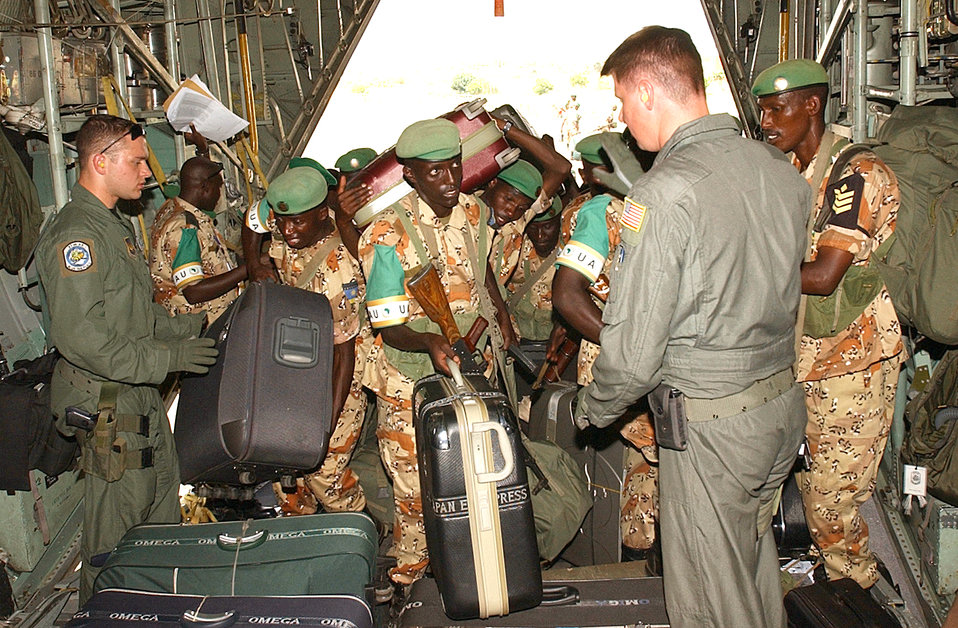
Back to Rwanda

SUDAN -- Airman 1st Class Brian McCann (left) and Staff Sgt. Sean McCormick assist Rwandan peacekeepers boarding a C-130 Hercules from Ramstein Air Base, Germany, on Oct. 4. The peacekeepers are departing the Darfur region of Sudan and returning to Rwanda after a six-month deployment supporting the African Union Missions. The Airmen are loadmasters with the 37th Airlift Squadron at Ramstein.